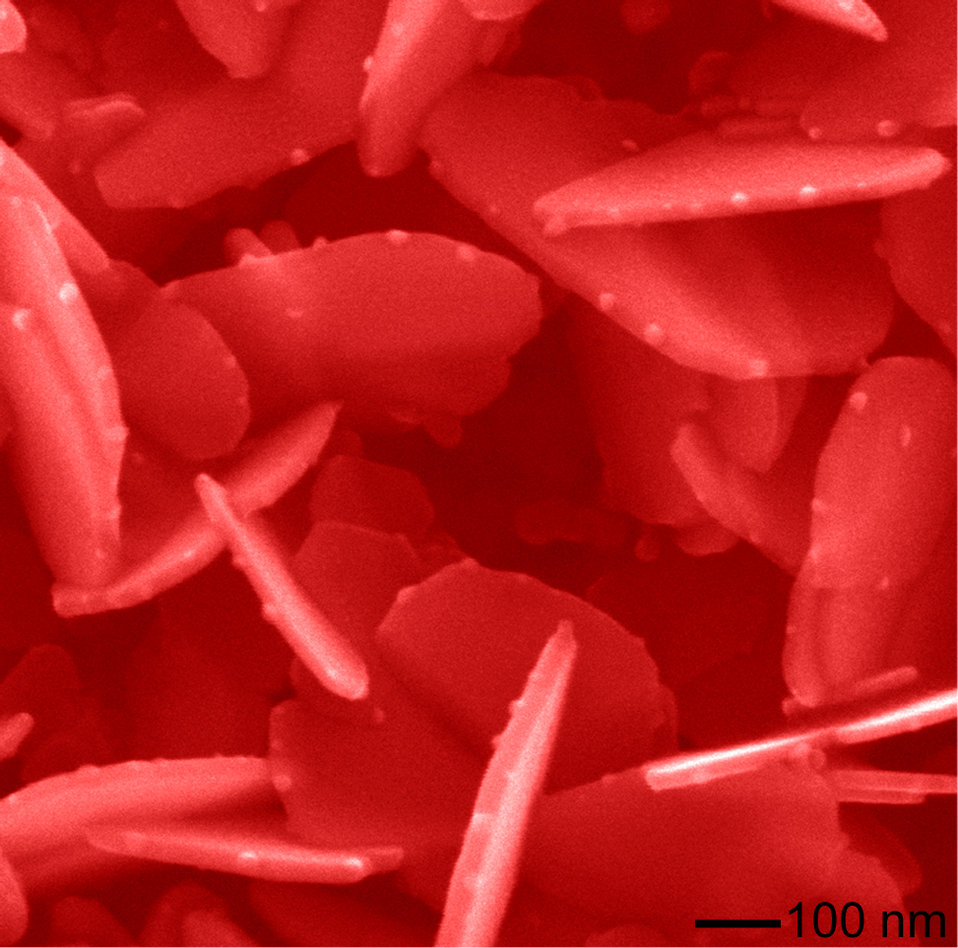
AT ARGONNE NATIONAL LABORATORY, THESE SILVER NANOPLATES ARE DECORATED WITH SILVER OXY SALT NANOPARTICLES ALONG THE EDGES.

These nanostructures were grown under irradiation of high-energy x-rays, which allowed scientists to watch them grow in real time. The image is from a scanning electron microscope. Research was created using Argonne's Advanced Photo Source, Center Center Funding Nanoscale Materials, and the Electron Microscopy Center. Funding providing by the U.S. Department of Energy, Office of Science.